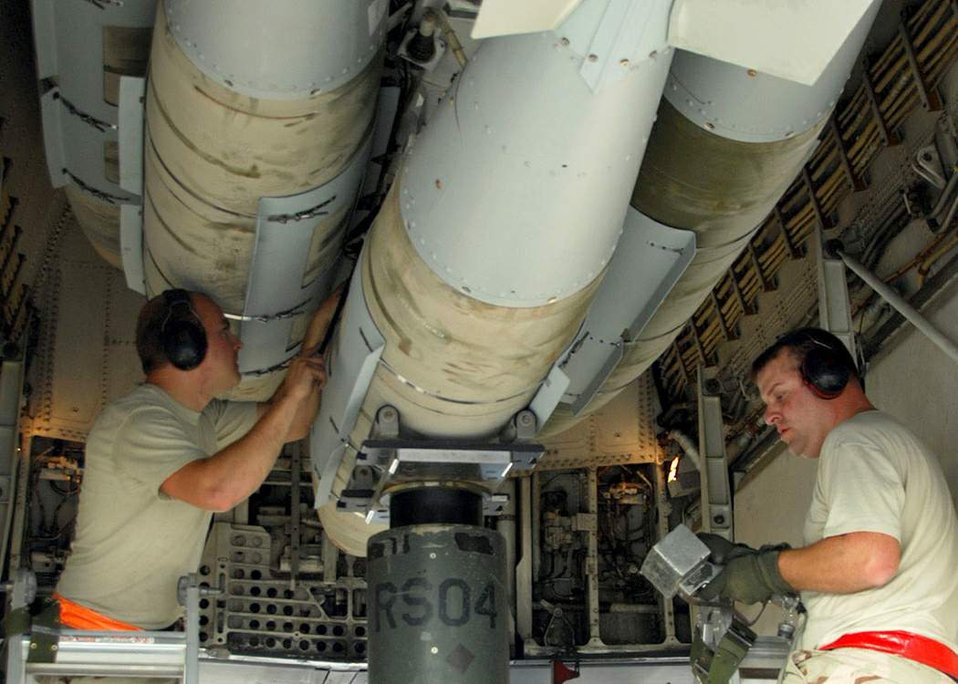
Dec. 31 airpower summary: B-1Bs deliver punch

Staff Sgt. Brandon Neitz and Tech. Sgt. James Sheldon load 2,000-pound bombs on an Air Force B-1B Lancer in preparation for a mission in support of Operation Enduring Freedom. The B-1B can rapidly deliver massive quantities of precision and non-precision weapons on specific targets.